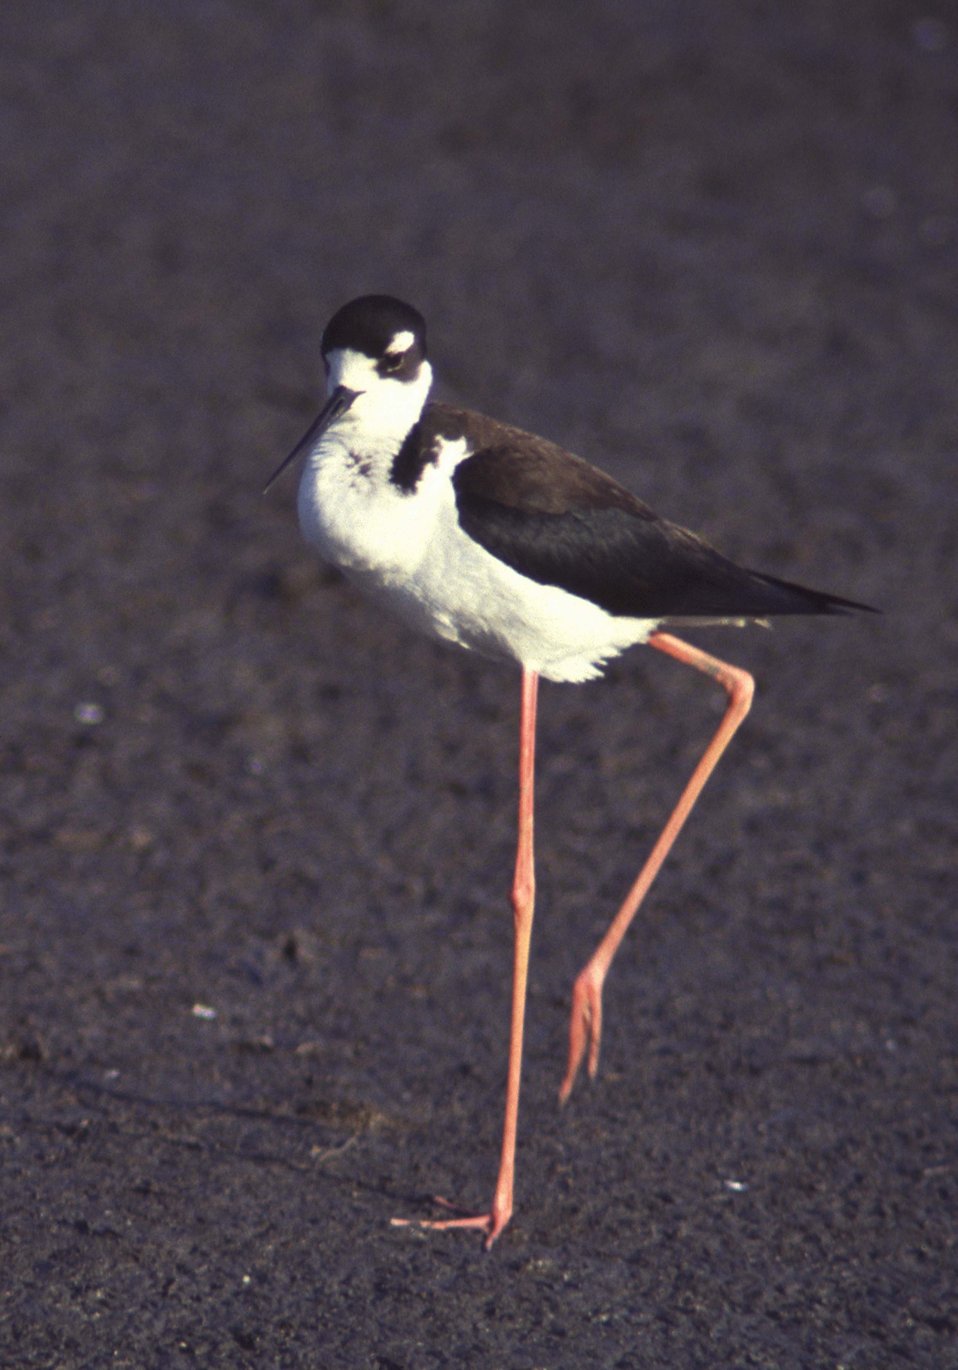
Black-Necked Stilt

Pt. Mahon, DE.